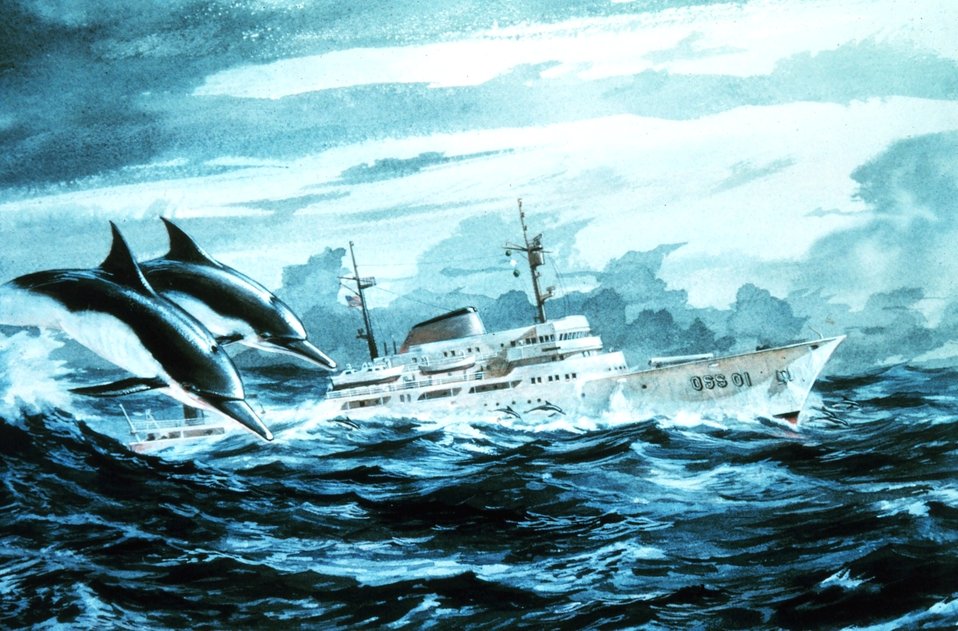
Artist's conception of the NOAA Ship OCEANOGRAPHER.